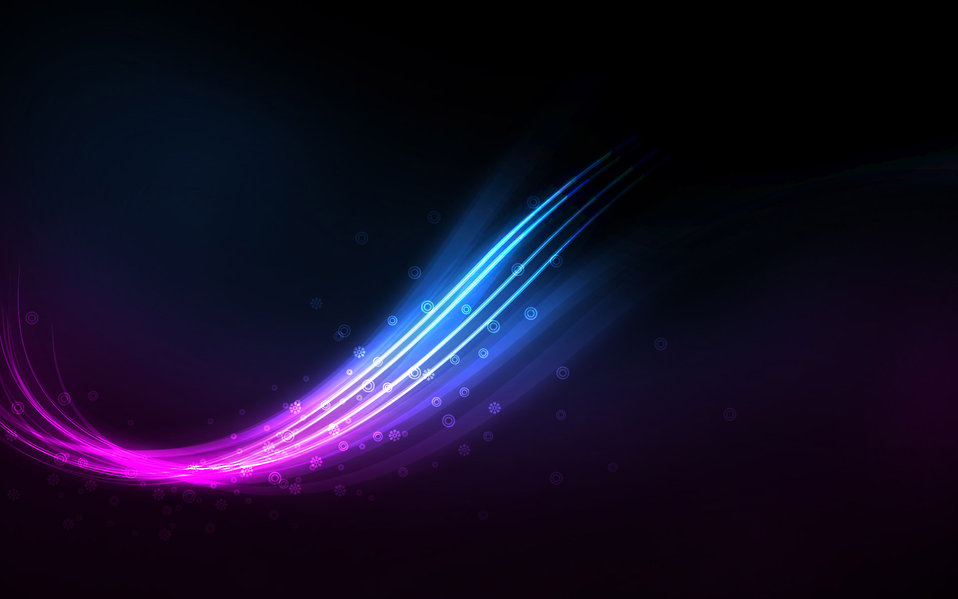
Blue background

Vector blue background.